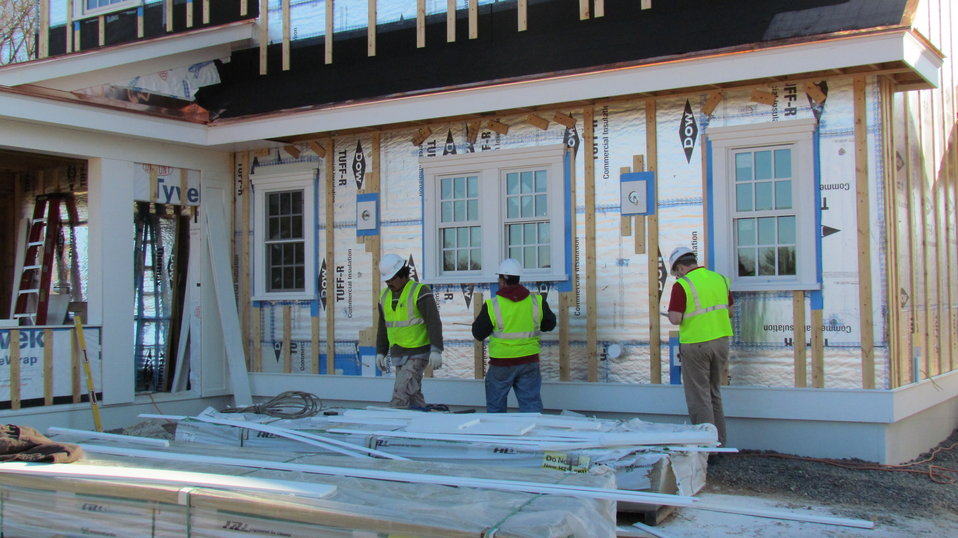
Construction personnel inspecting rear wall of facility prior to installation of cement board siding.